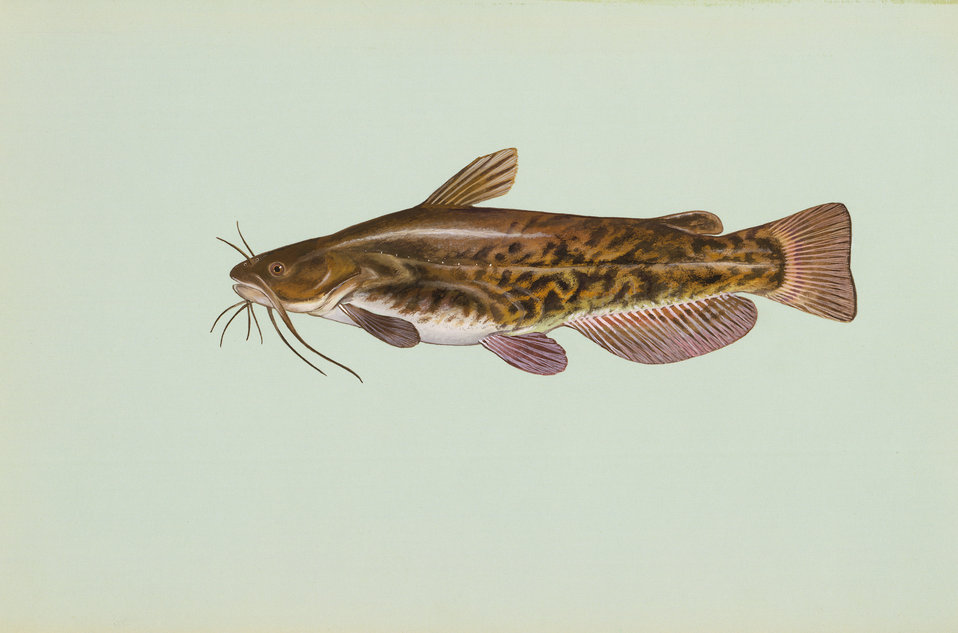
Brown bullhead catfish

A brown bullhead catfish from scans of artwork commissioned by the Fish and Wildlife Service in the 1970s. Original art is kept at DC Booth Fish Hatchery in Spearfish, SD.